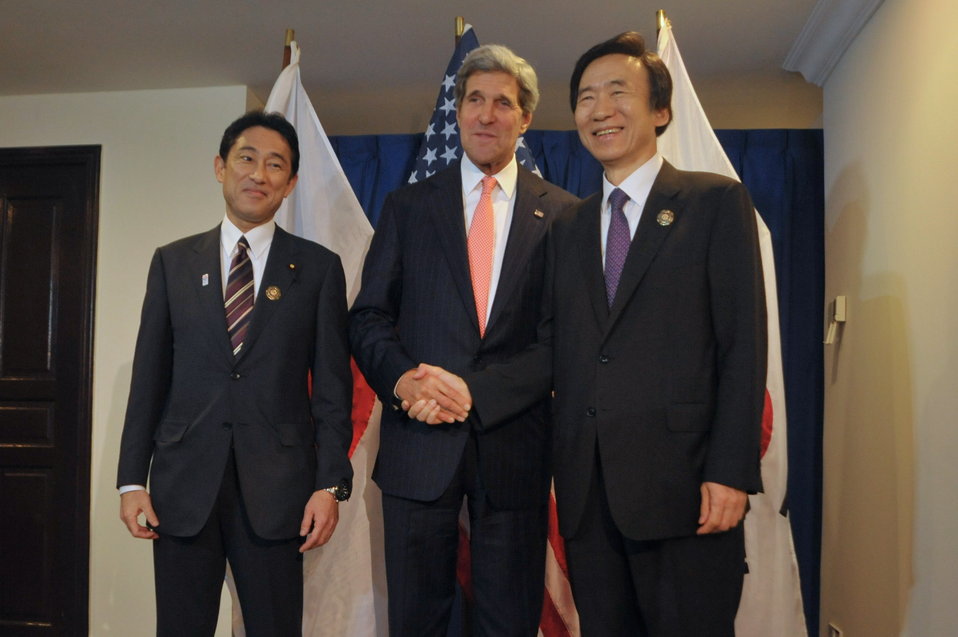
Secretary Kerry Meets With Japanese, Korean Foreign Ministers

U.S. Secretary of State John Kerry poses with Japanese Foreign Minister Fumio Kishida and Republic of Korea Foreign Minister Yun Byung-se during a trilateral meeting at the ASEAN ministerial meeting in Bandar Seri Begawan, Brunei, on July 1, 2013.